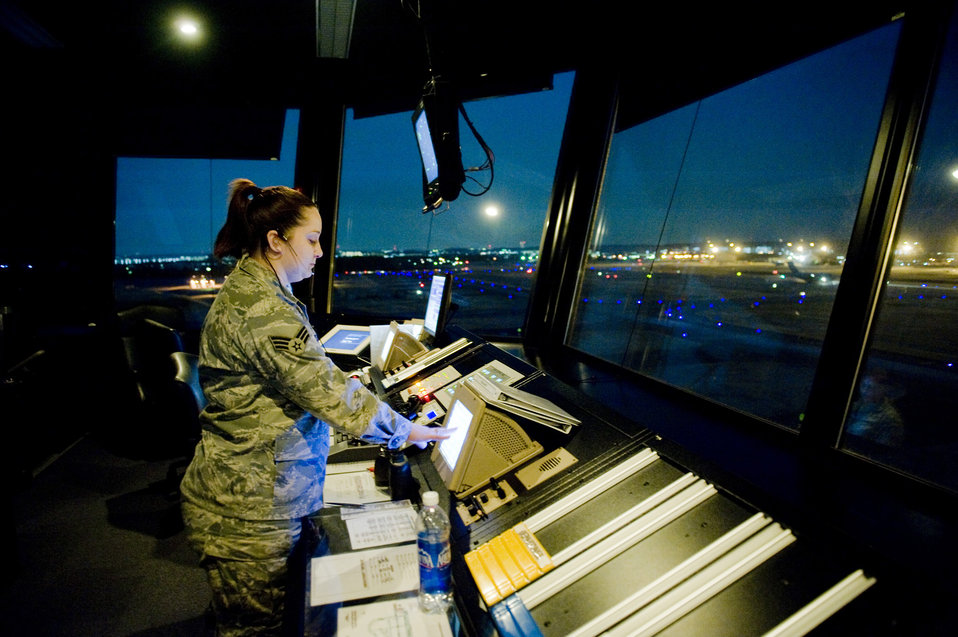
Yokota's ATC manages influx of aircraft for Operation Tomodachi

YOKOTA AIR BASE, Japan -- Senior Airman Lyndsi Tullos, 374th Operations Support Squadron air traffic controller, communicates with the Maintenance Operation Center about flight line operations here March 24. Yokota's flight line has received over triple the amount of aircraft due to Operation Tomodachi. The military and civilian aircraft have been from multiple nations carrying supplies, personnel and equipment in direct support of bringing relief efforts and trying to minimize human suffering.